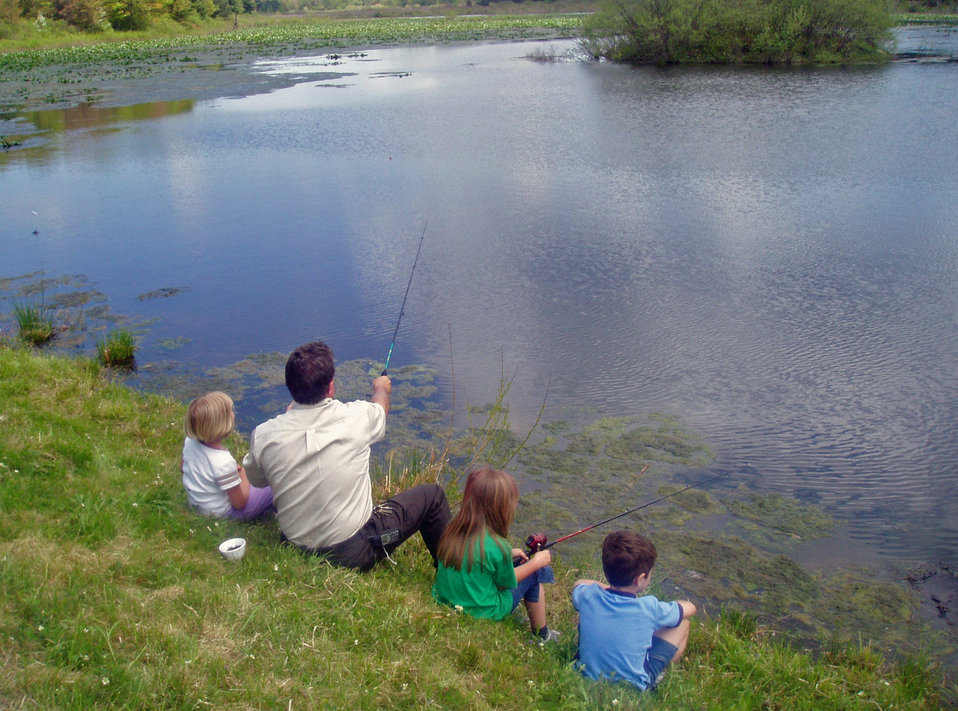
Fishing

Refuge staff fishing with kids at Erie National Wildlife Refuge in Pennsylvania.